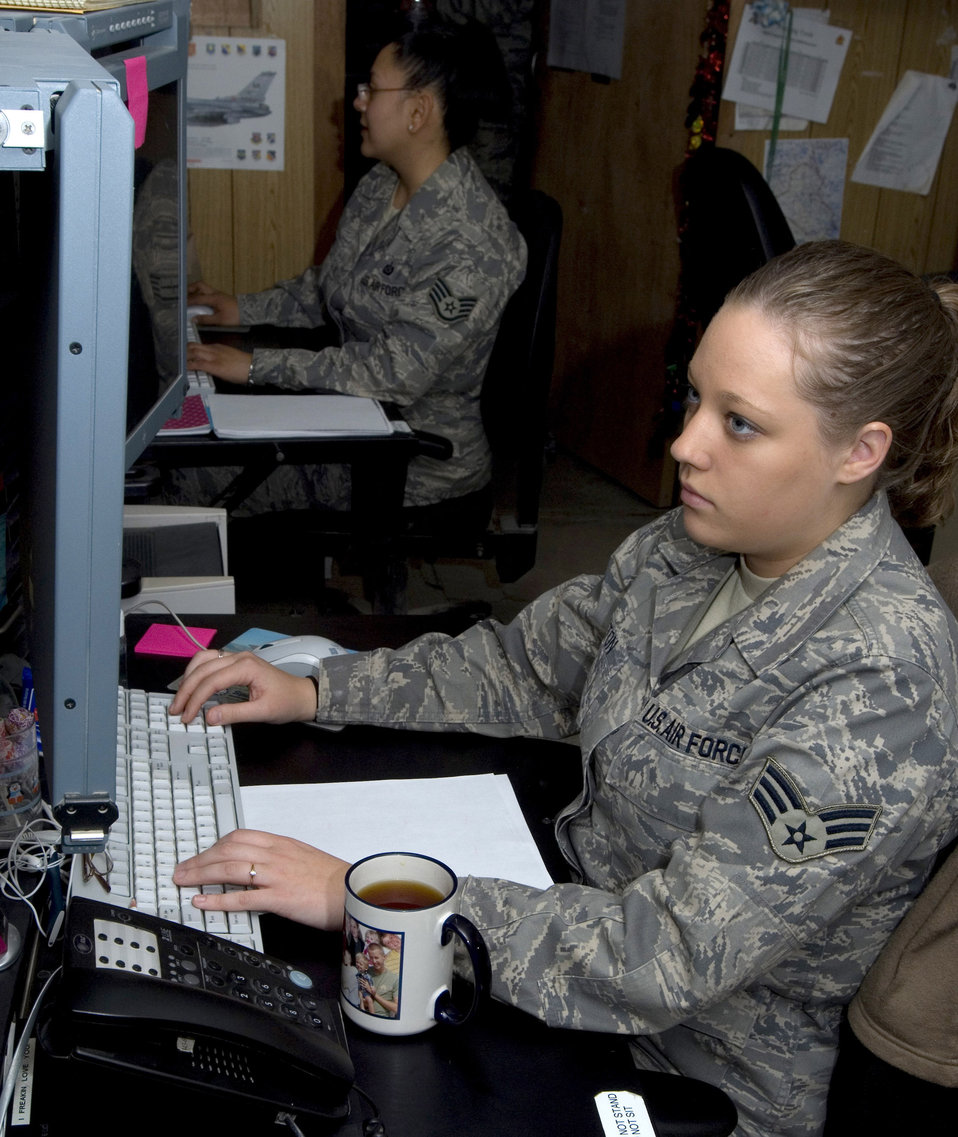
TARS pod brings picture into focus

Senior Airman Katie Boston, a 332nd Expeditionary Operations Support Squadron imagery analyst at Joint Base Balad, Iraq, supplies decision makers with imagery intelligence. Theater Airborne Reconnaissance System imagery helps ground commanders achieve tactical objectives. Airman Boston is deployed from Langley Air Force Base, Va. Her hometown is Milwaukee.